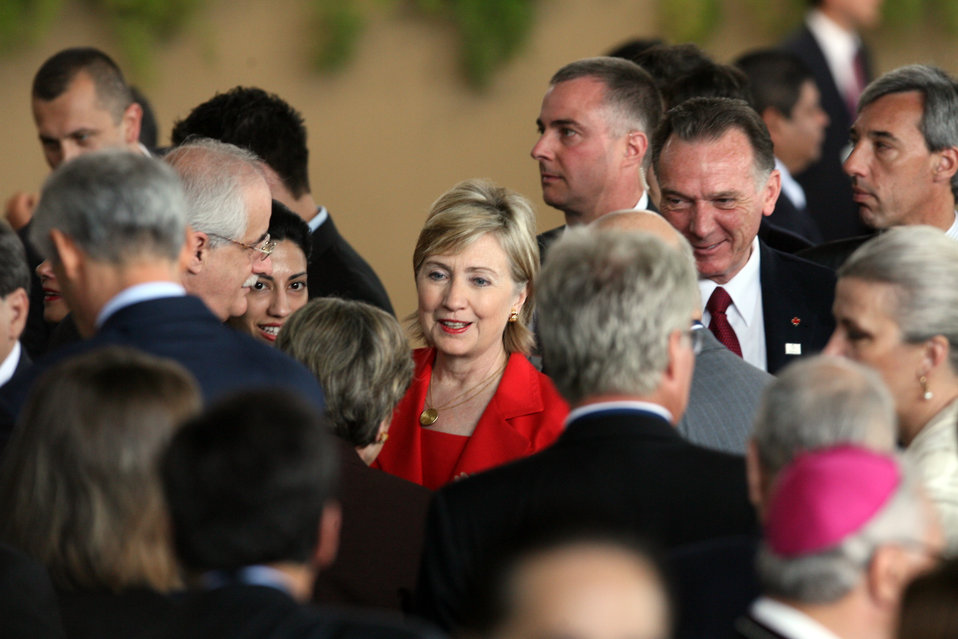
Secretary Clinton Arrives at Inauguration Ceremony of President Mauricio Funes

U.S. Secretary of State Hillary Rodham Clinton enters the CIFCO (International Center of Fairs and Conventions) in San Salvador, El Salvador June 1, 2009 to take part in the Presidential Inauguration Ceremony of President Mauricio Funes.